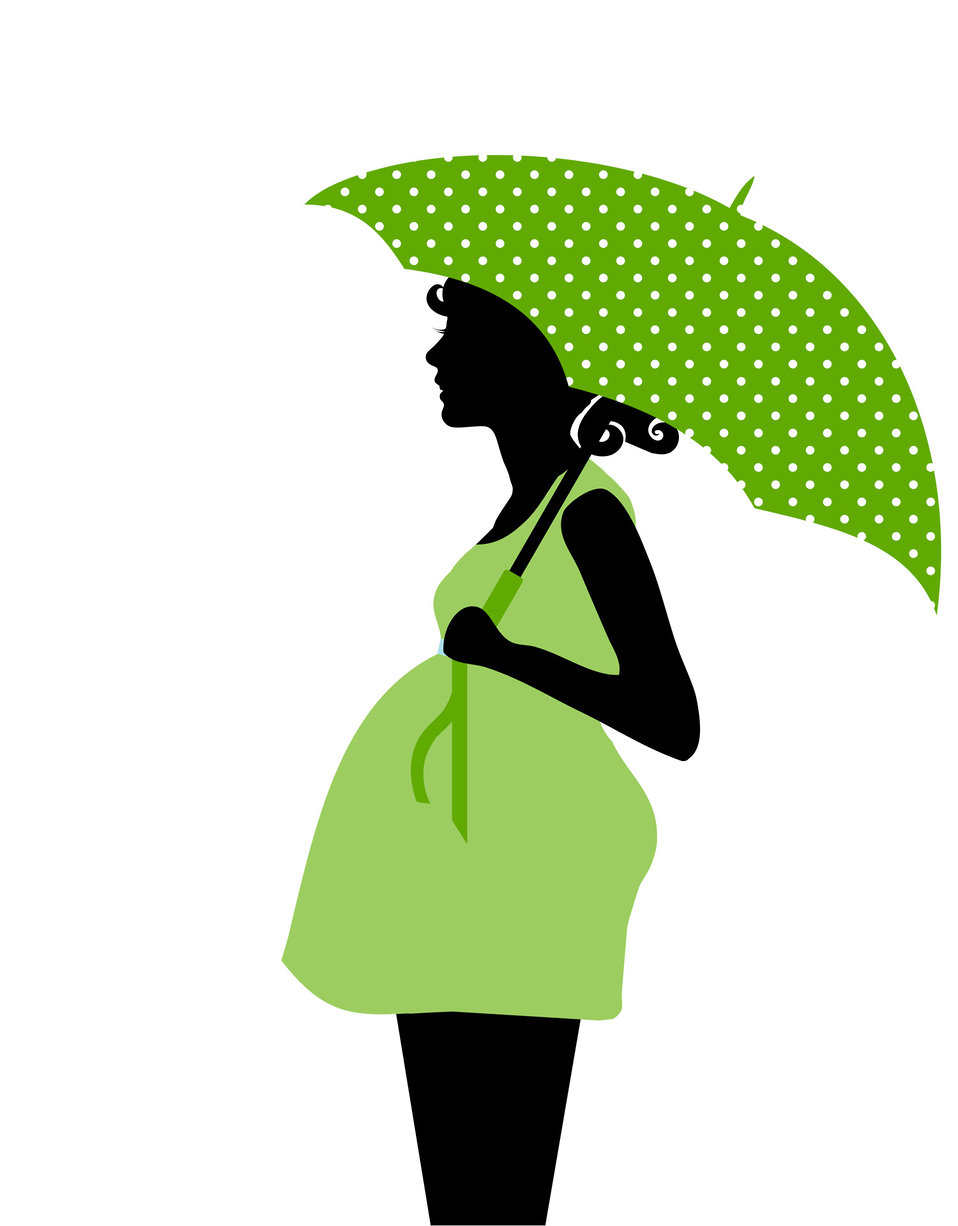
Pregnant woman silhouette clipart

Black silhouette of a pregnant woman with umbrella clipart.